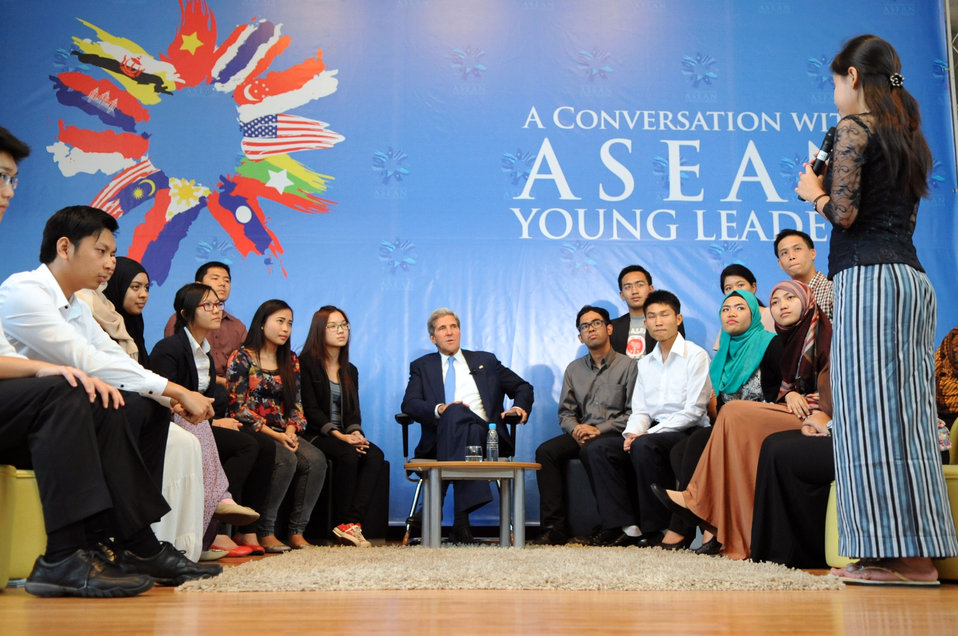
An ASEAN Youth Leader Asks Secretary Kerry a Question

A student asks U.S. Secretary of State John Kerry a question during a Youth Leaders meeting in Bandar Seri Begawan, Brunei, before the U.S.-ASEAN Summit meeting begins on October 9, 2013.